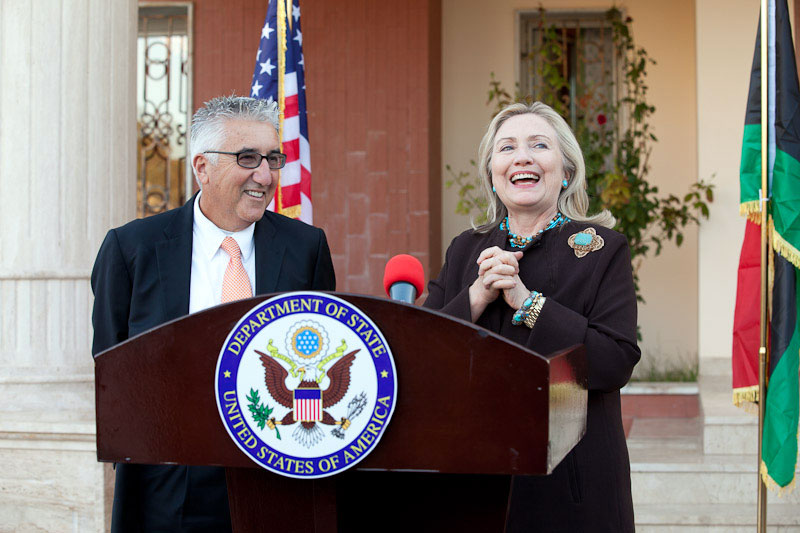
Ambassador Kretz Welcomes Secretary Clinton

U.S. Ambassador to Libya Gene Kretz welcomes U.S. Secretary of State Hillary Rodham Clinton to the recently-opened U.S. Embassy in Tripoli, Libya, on October 18, 2011.